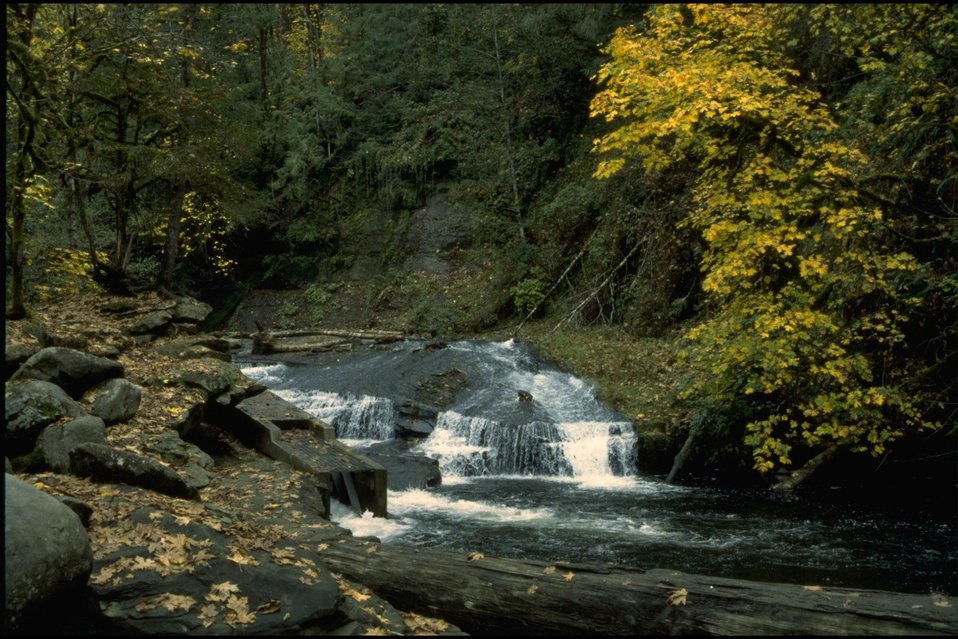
Scenic view, Lower Lake Creek.